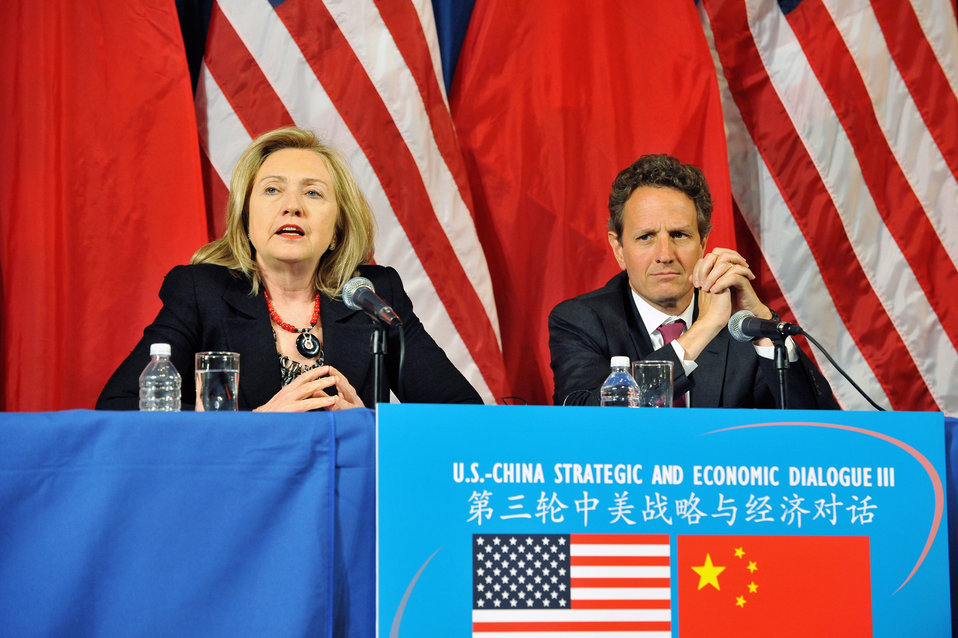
Secretaries Clinton and Geithner Deliver Closing Remarks

U.S. Secretary of State Hillary Rodham Clinton and U.S. Secretary of the Treasury Timothy Geithner along with Chinese Premier Wang and Chinese State Councilor Dai deliver joint closing remarks, in the U.S. Department of the Interior’s Sidney R. Yates Auditorium in Washington, D.C., on May 10, 2011.